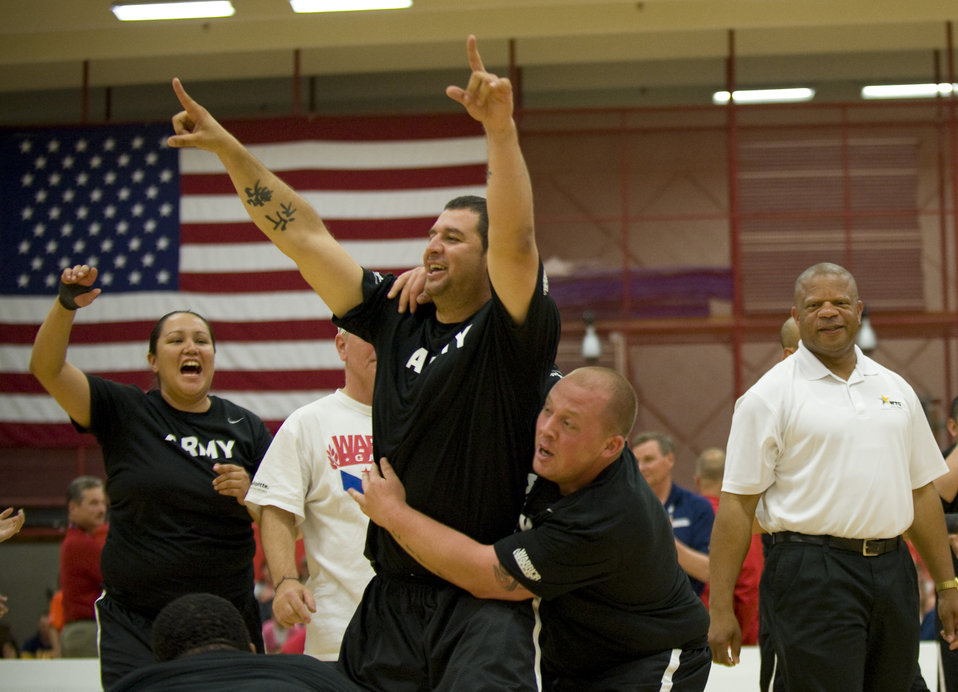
Army marches through Air Force

Members of the Army sitting volleyball team celebrate after winning a close game against the Air Force May 19, 2011, during the the second annual Warrior Games in Colorado Springs, Colo. The Army won the series with two straight games.